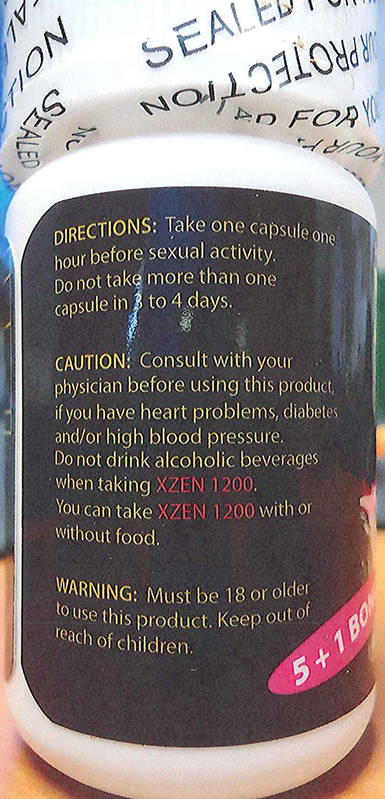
RECALLED – Dietary Supplement

April 1, 2014 – Product Recall – Nova Products, Inc. Issues Voluntary Nationwide Recall of Dietary Supplements with Undeclared Active Pharmaceutical Ingredients.